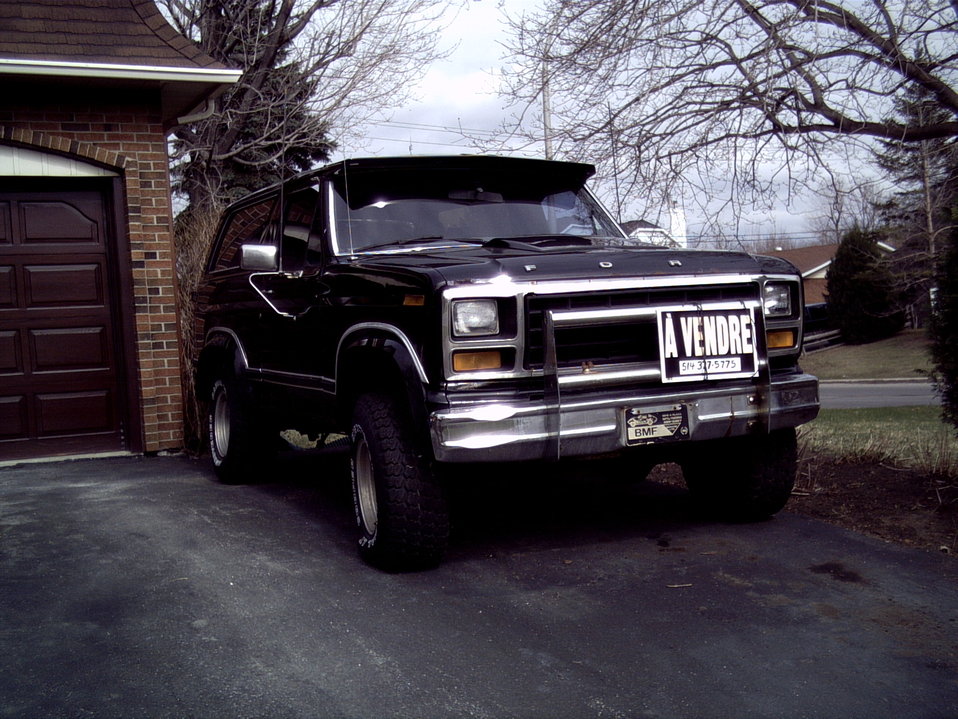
Licensing